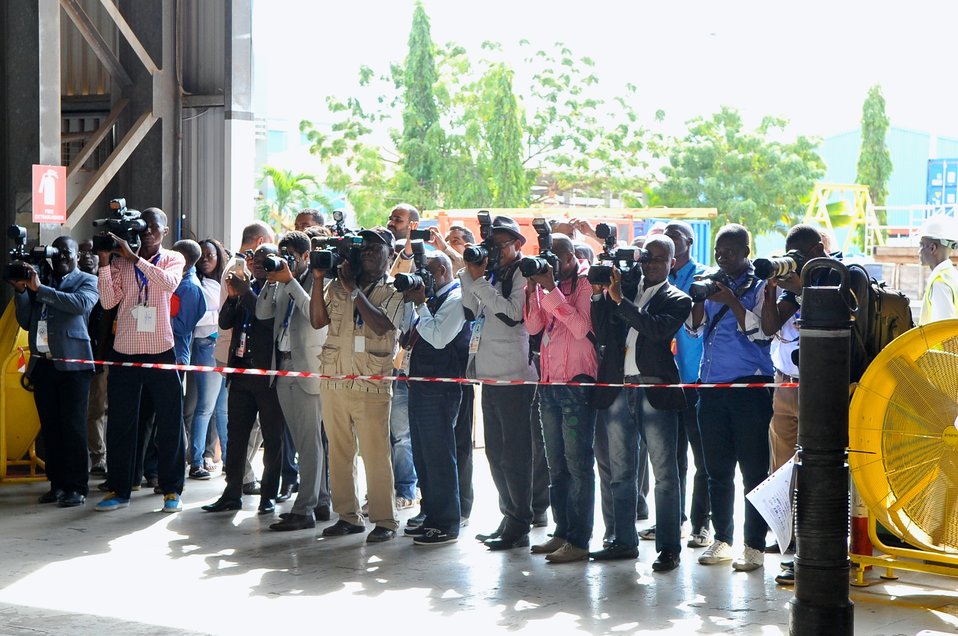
Angolan Media Covers Secretary Kerry's Visit to Sonils Compound in Port of Luanda

A group of Angolan reporters and cameramen await U.S. Secretary of State John Kerry as he tours a General Electric facility in the Sonils compound in the Port of Luanda on May 4, 2014.